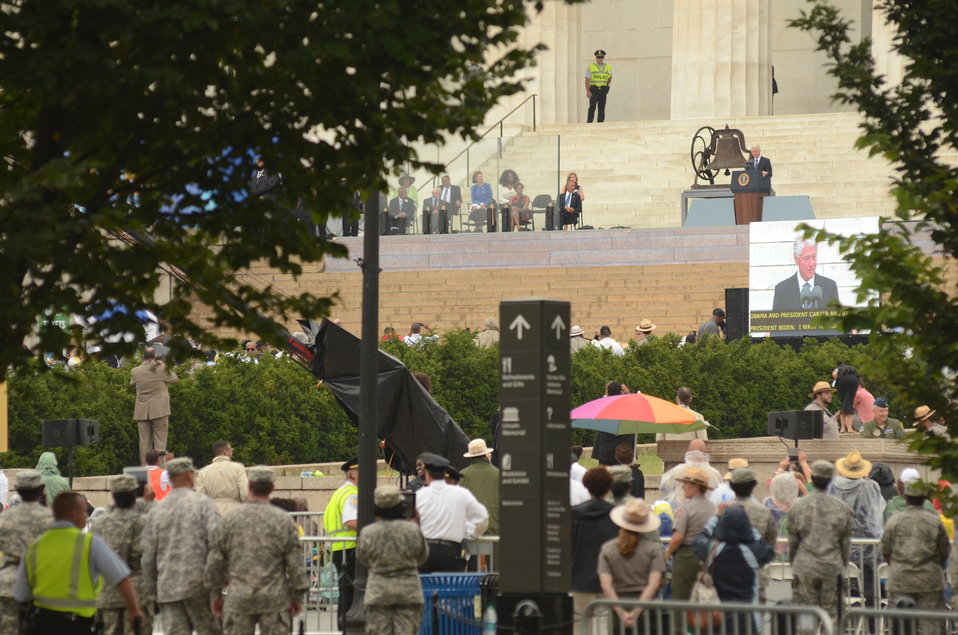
Former President Bill Clinton spears at the Lincoln Memorial for the March on Washington, D.C., on Wed., Aug. 28, 2013.